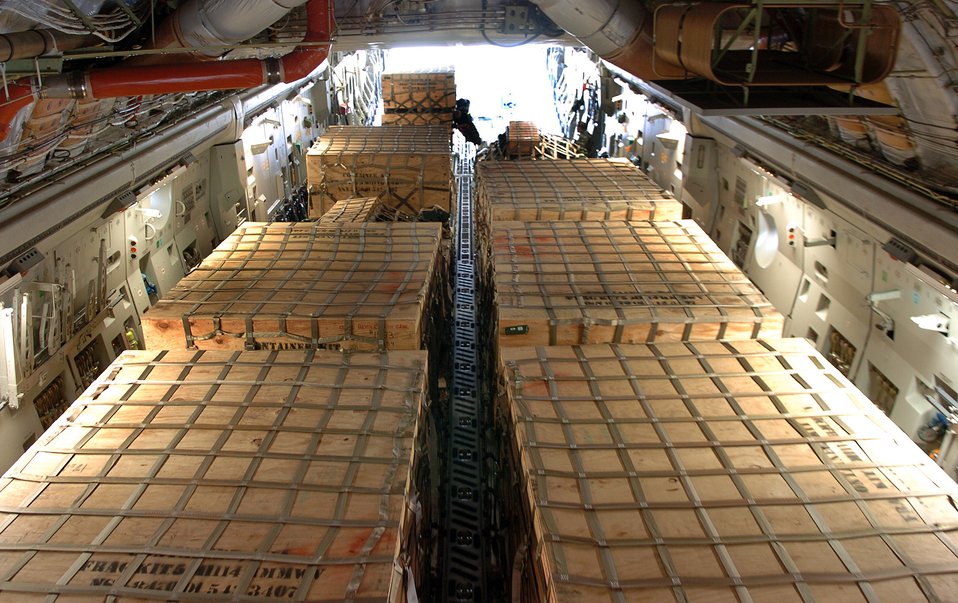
Incirlik AB

Airmen from the 728th Air Mobility Squadron load a C-17 Globemaster III at Incirlik Air Base, Turkey, Nov. 13. Over half of all air cargo delivered to support Operation Iraqi Freedom is processed through here. By flying critical supplies via Globemaster from this eastern Turkey air base directly to troops at remote locations in Iraq, more than 3,300 convoy truck missions and 9,000 servicemembers supporting the convoys are taken off Iraq roads each month.